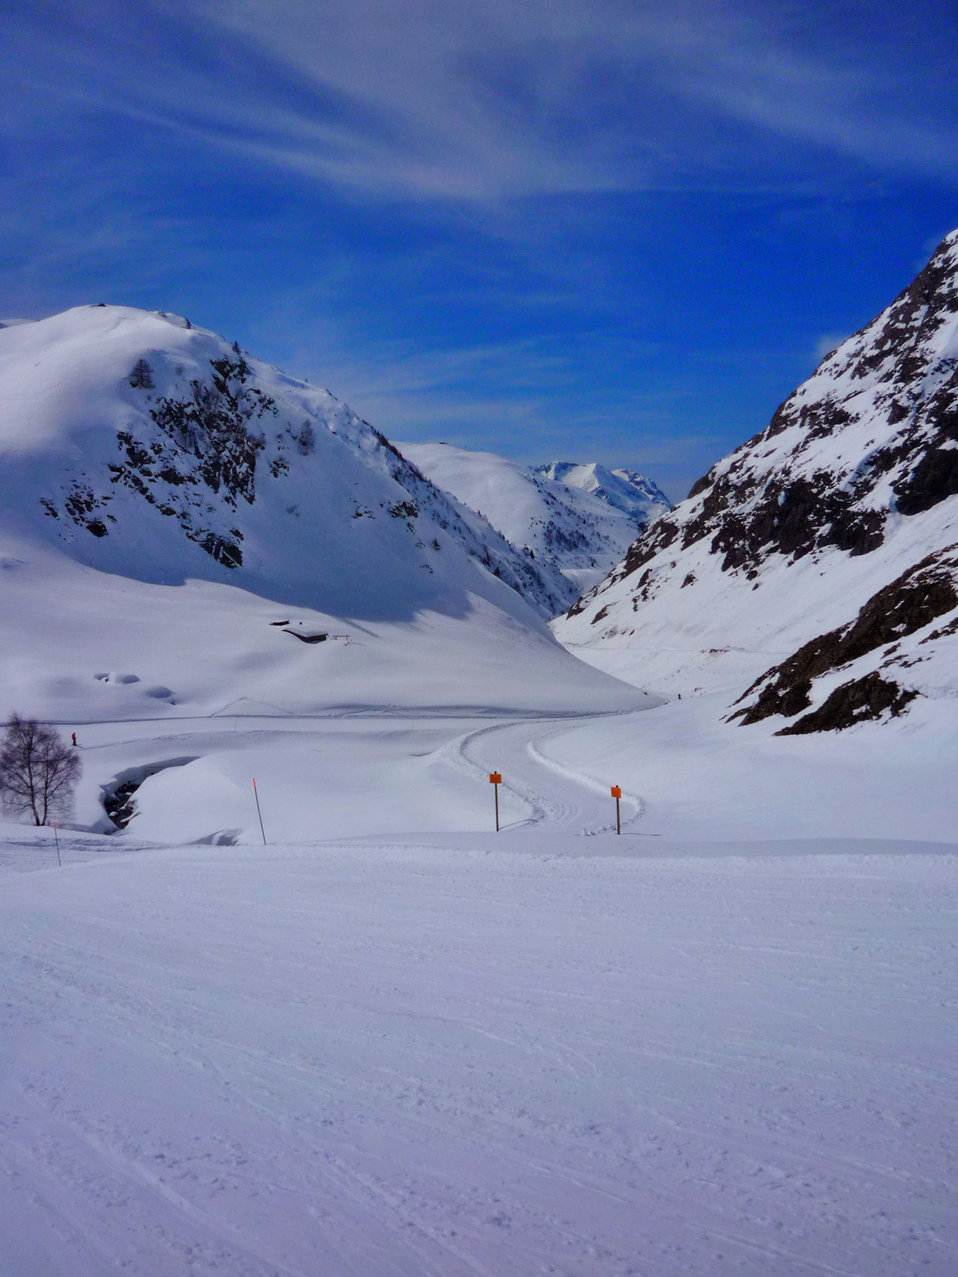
Winter mountains 2013

Winter mountains in france 2013.